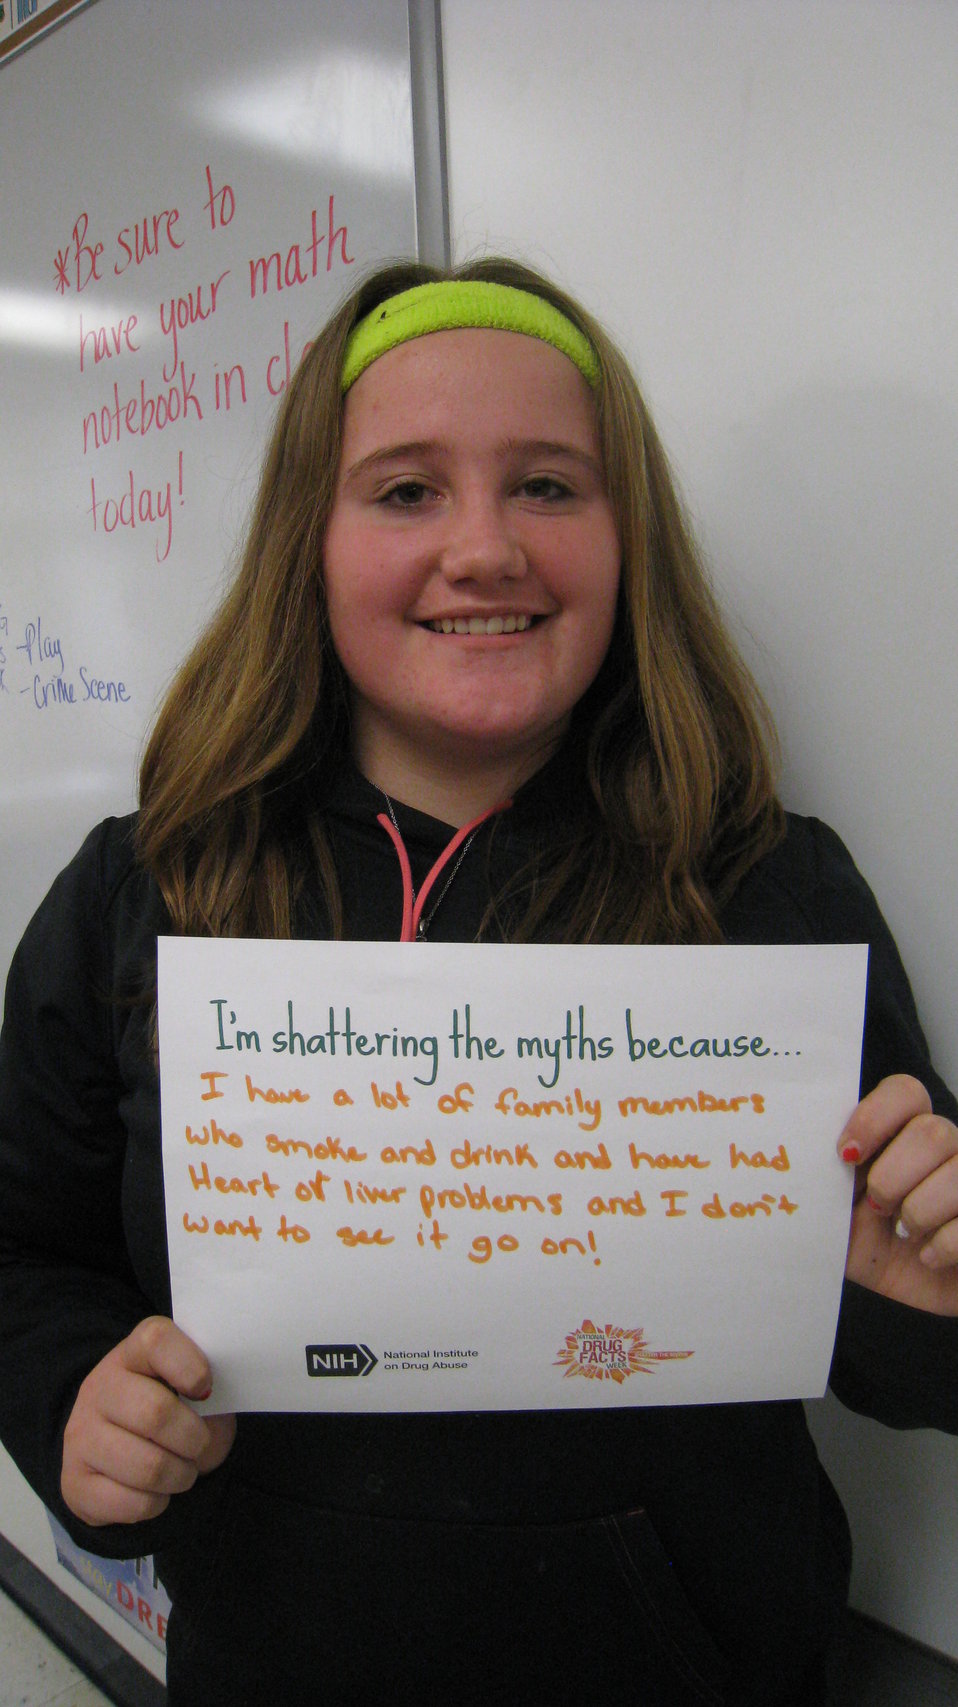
I'm Shattering the Myths Because...

Teenagers from the Van Buren County SAFE Coalition's, Youth Leadership Council (YLC) in Keosauqua, Iowa participate in various events during National Drug Facts Week, 2014.